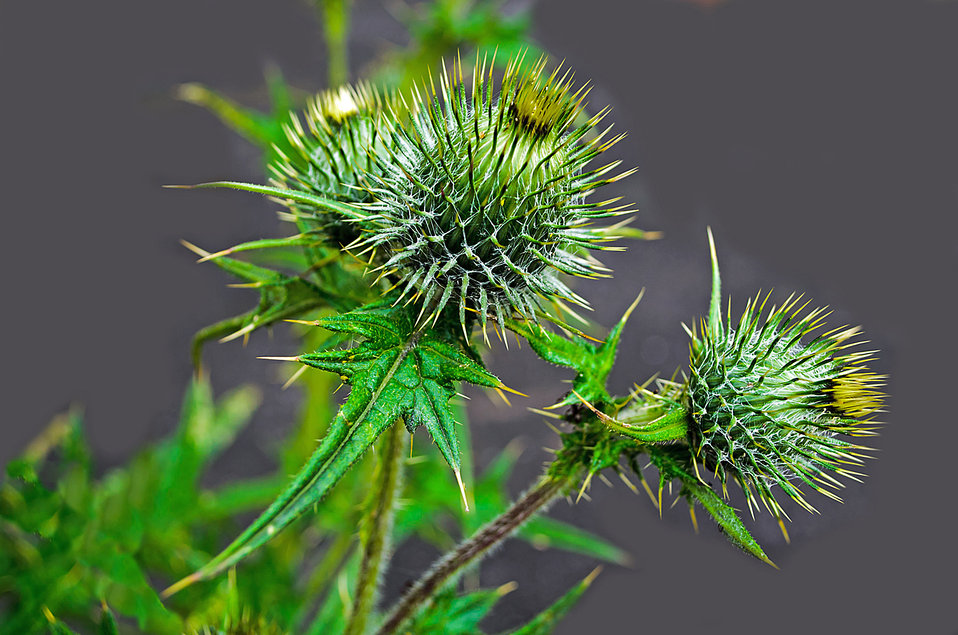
Thistle - macro.